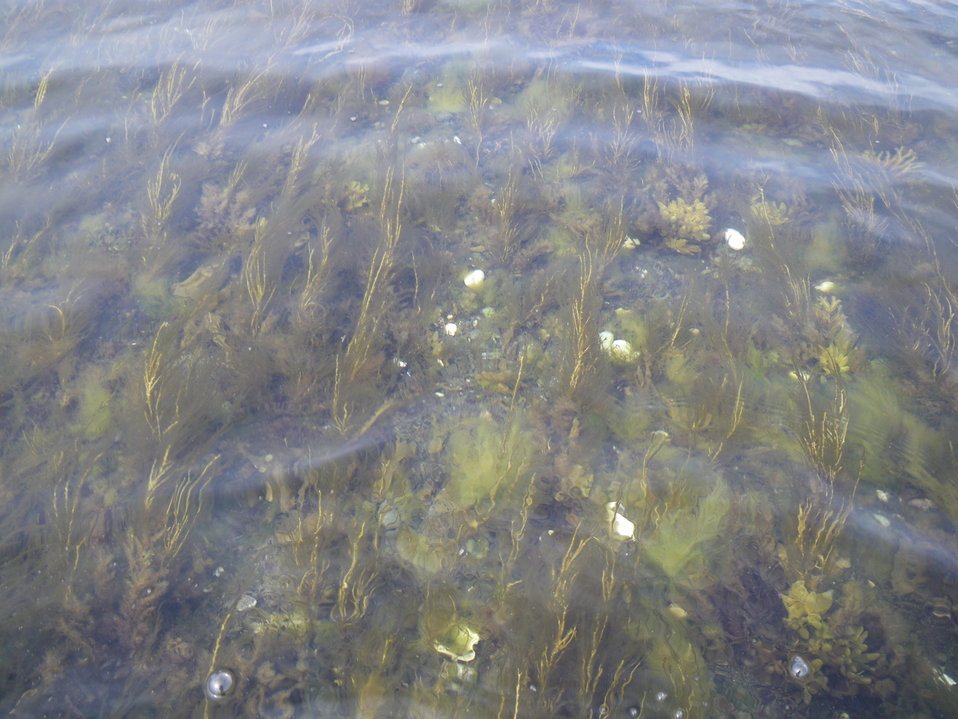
Algae in Kinzarof Lagoon

Kinzarof Lagoon, Izembek National Wildlife Refuge